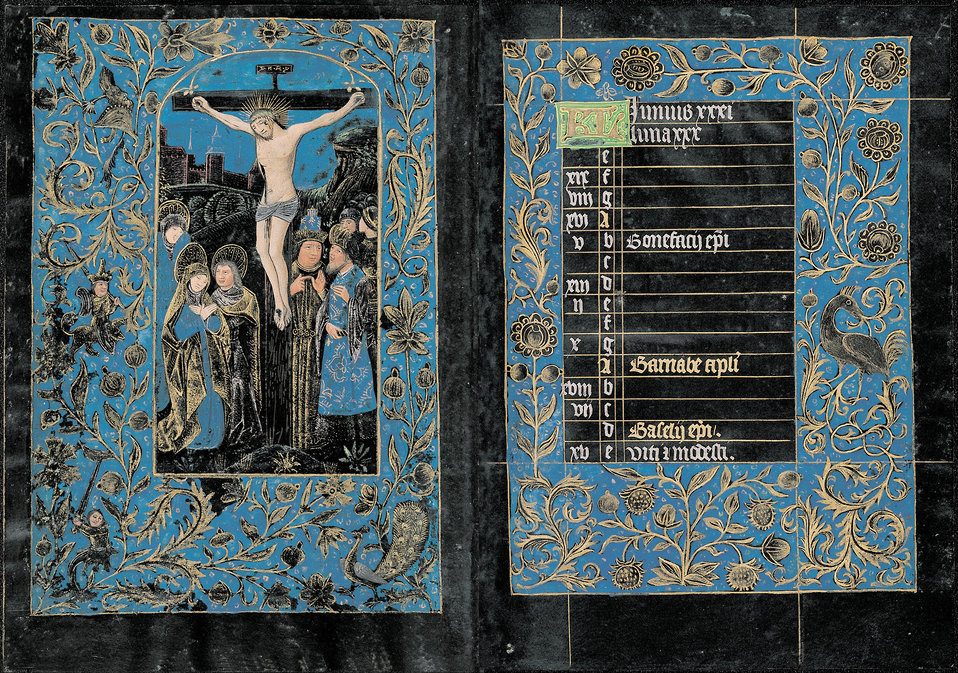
'Black Hours' - Google Art Project